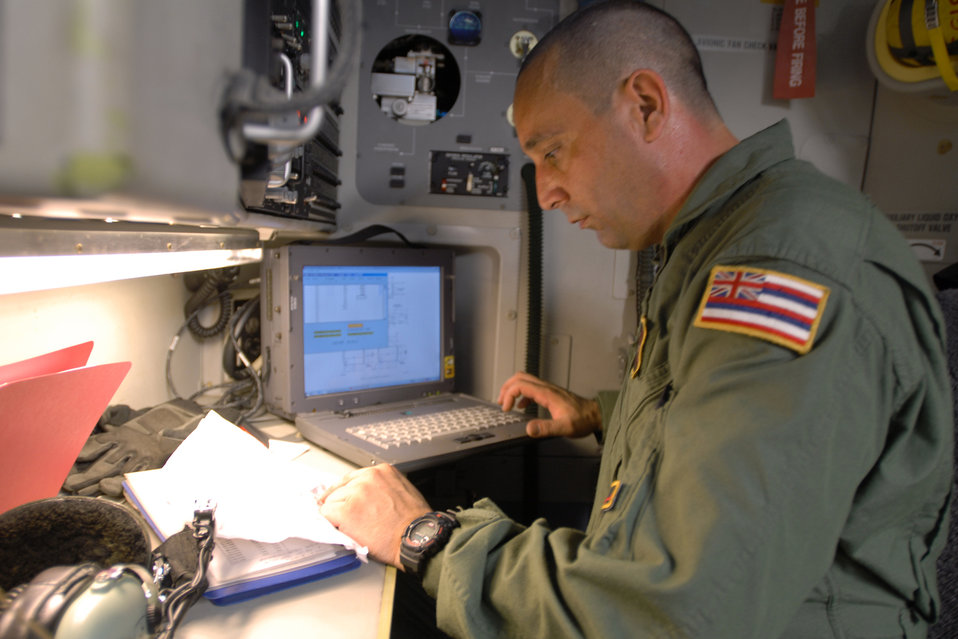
Humanitarian aid bound for tsunami relief effort

Tech. Sgt. Kimo McKee inputs load weight data for humanitarian aid supplies from the Federal Emergency Management Agency after it was loaded by the Hawaii Air National Guard, Hawaii National Guard and Hickam Air Force Base active-duty Airmen into a C-17 Globemaster III bound for American Samoa to assist in the relief efforts under way Sept. 30, 2009, at Hickam AFB, Hawaii. The efforts are in the wake of tsunamis triggered by an undersea earthquake Sept. 29 that has left more than 140 people dead in the South Pacific region. More than 90 Airmen and Soldiers deployed from Hawaii for the humanitarian mission. Sergeant McKee is a Hawaii Air National Guard loadmaster.